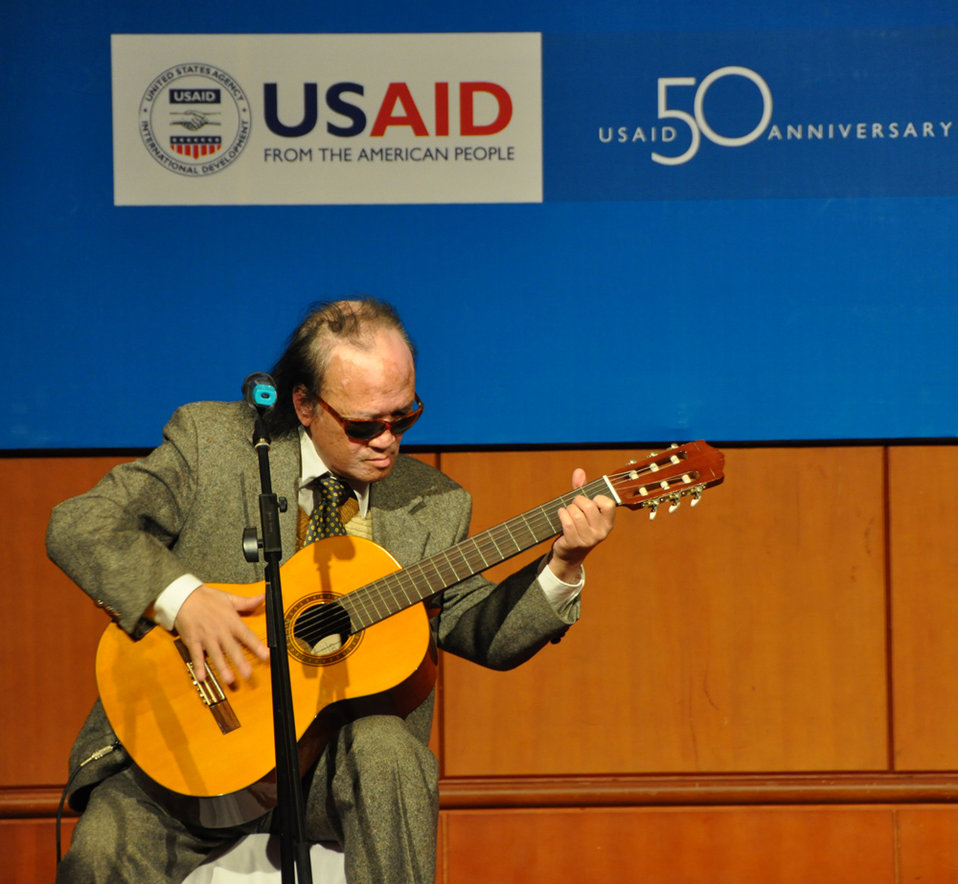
USAID recognizes employers hiring workers with disabilities in Vietnam

Visually impaired musician Van Vuong performs at a USAID-supported event recognizing employers who hire Vietnamese with disabilities.